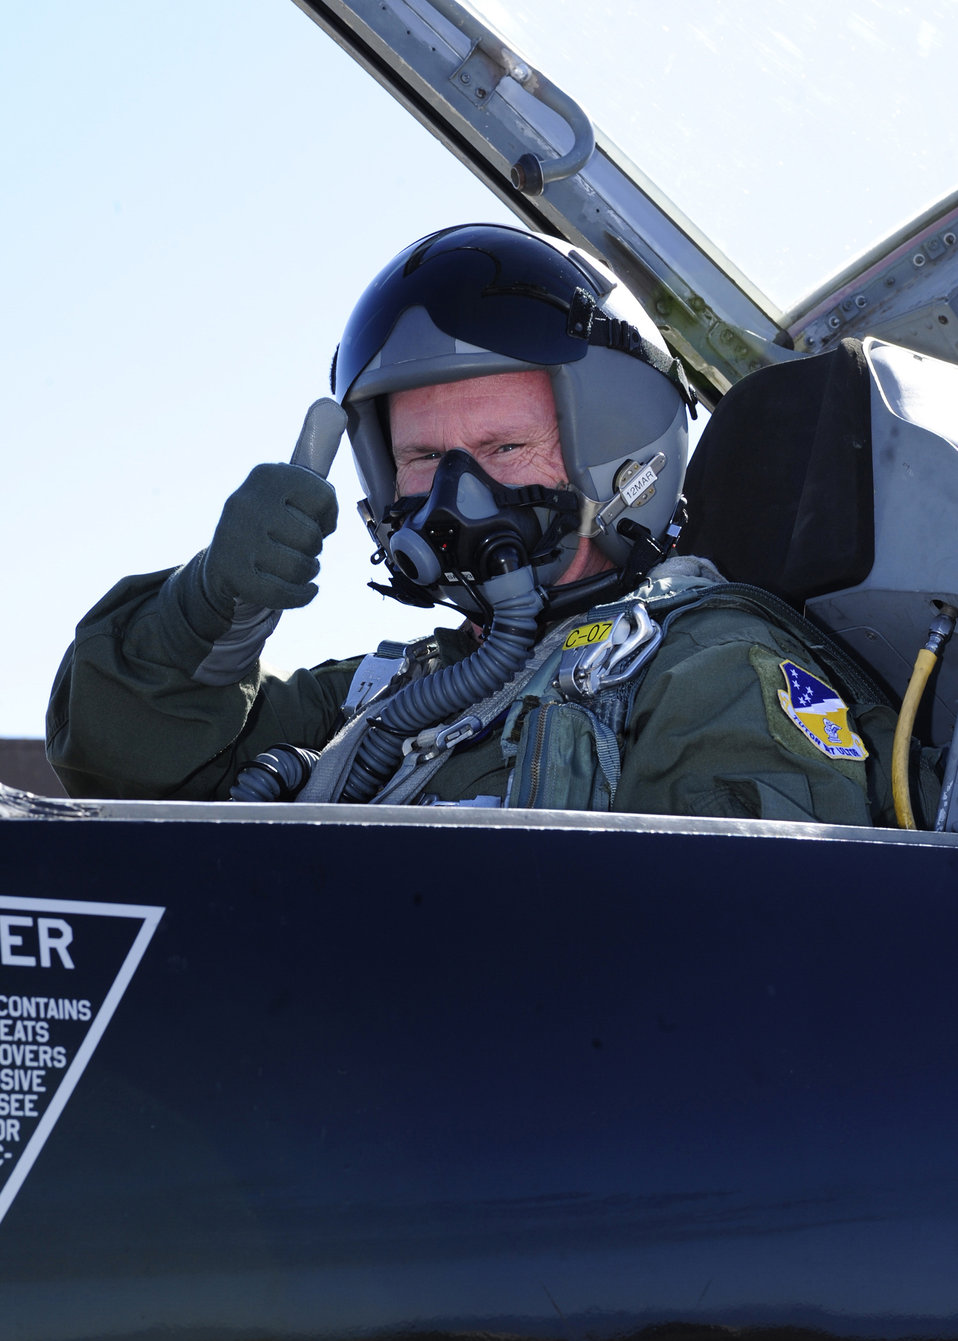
Army missle range commander visits Holloman Airmen

Army Gen. John Regan gives a thumbs-up as he prepares to taxi out in a T-38 Talon for a training mission Feb. 12, 2010, at Holloman Air Force Base, N.M. General Regan, the White Sands Missile Range commanding general, received an incentive training flight and a tour of operations, including remotely piloted aircraft training, during his visit to Holloman AFB.